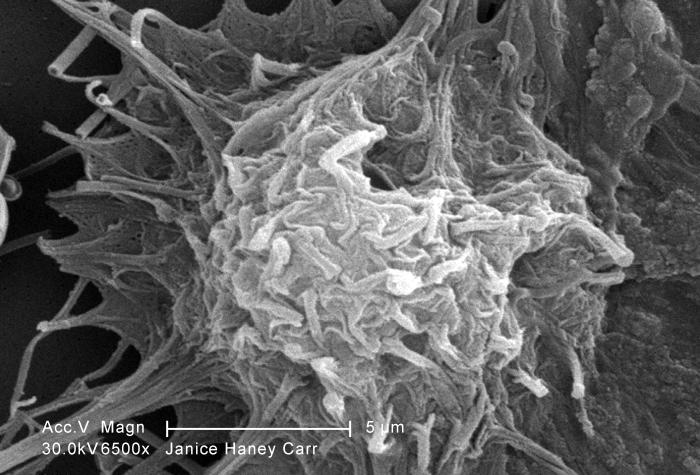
Under a relatively-high magnification of 6500X, this scanning electron micrograph (SEM) of an untreated water specimen extracted from a wild stream mainly used to control flooding during inclement weather, revealed the presence of unidentified organisms, which included bacteria, protozoa, and algae. In this particular view, a single amoeboid-like vegetative organism appeared to have 'blossomed' from the underlying biofilm mass occupying the right side of the image.